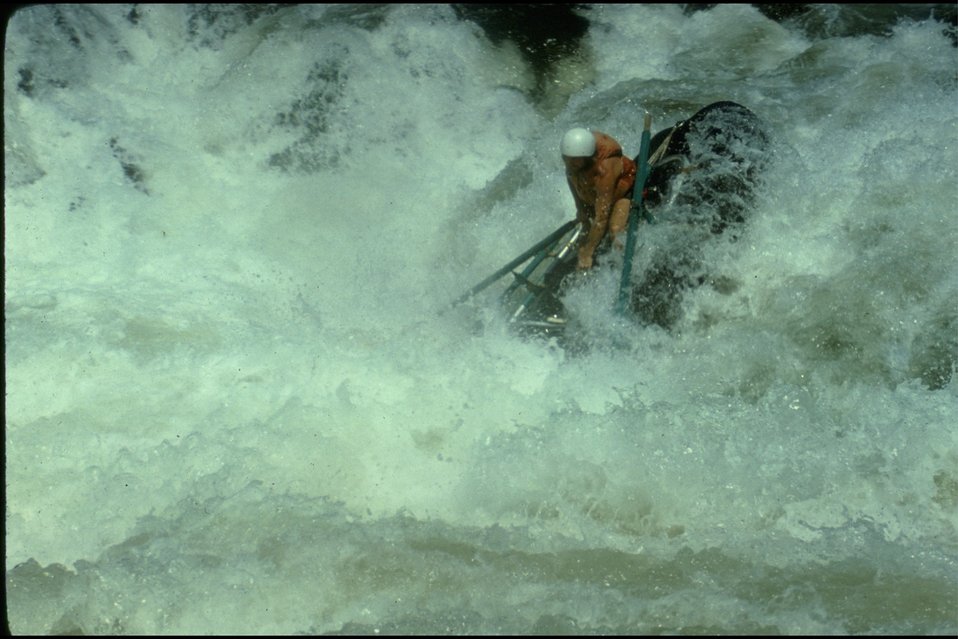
Rogue River - Rainie Falls.